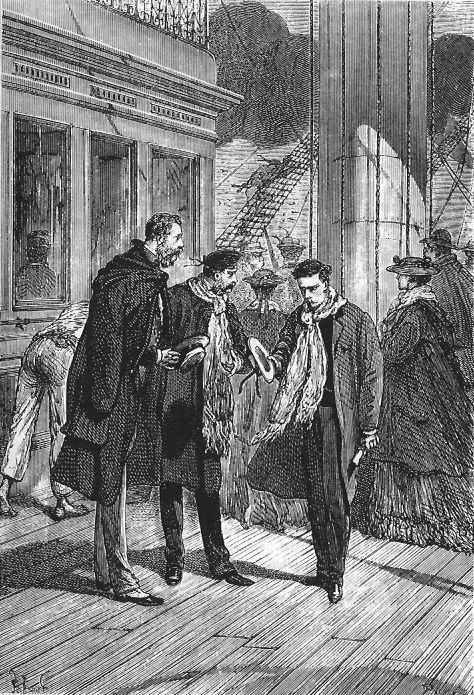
An illustration from Jules Verne's novel 'A Floating City' (1869) drawn by Jules Férat. Polski: Ilustracja powieści Juliusza Verne'a 'Pływające miasto' (1869) autorstwa Julesa Férata. Français : Jules Verne: 'Une Ville flottante' (1869), dessins par Jules Férat. Orginal text: Français : Le capitaine Corsican et moi nous nous saluâmes.